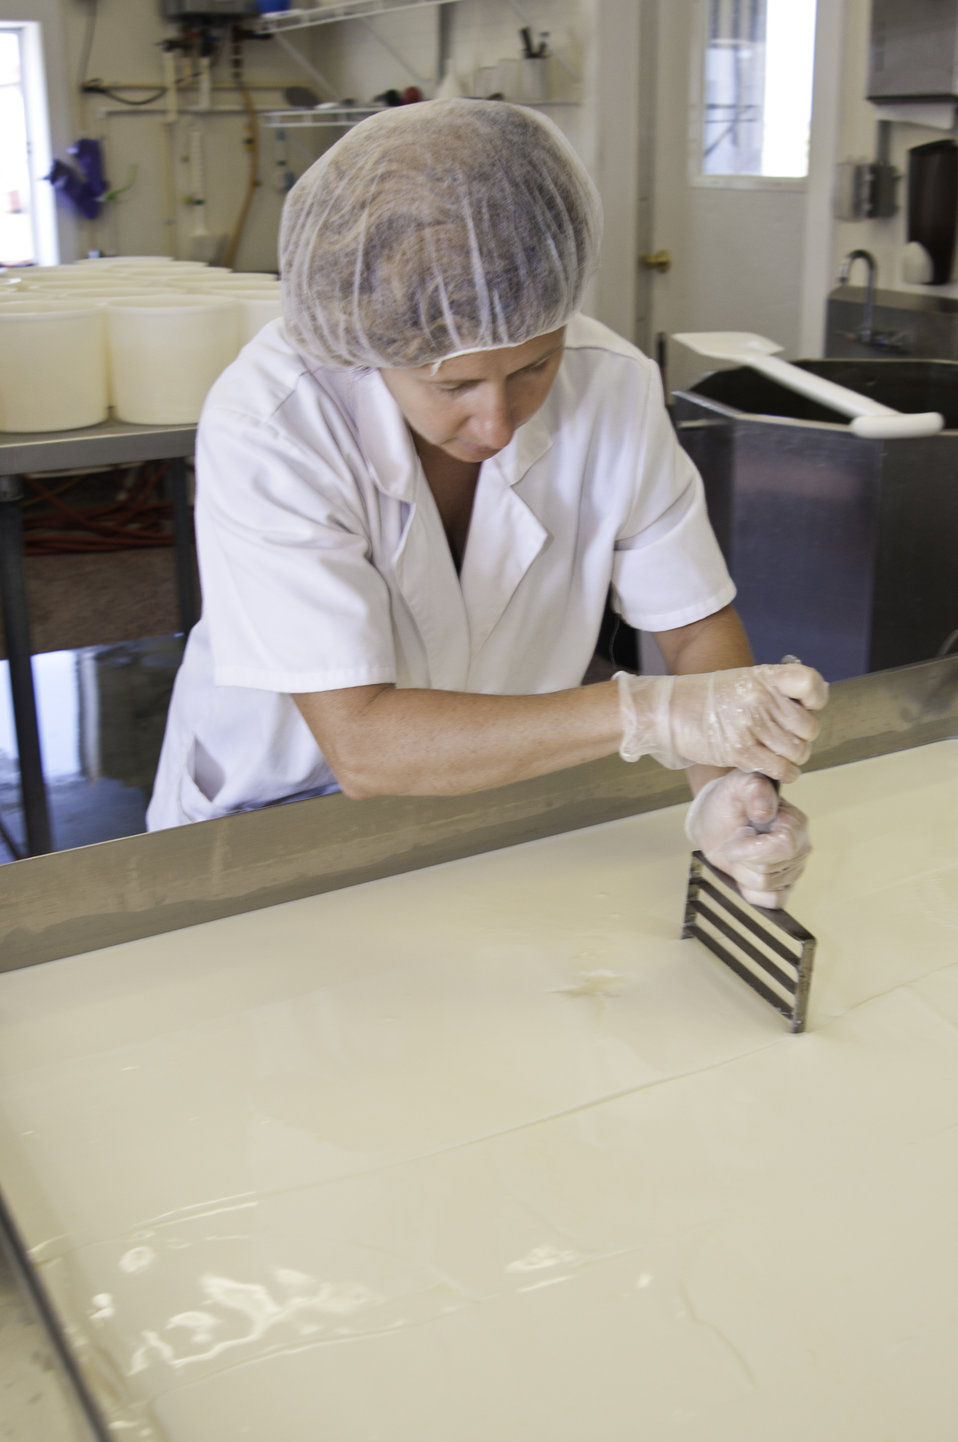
Chapel’s Country Creamery owner Holly Foster in Easton, MD cuts the milk curd with a curd knife in small cubes. Timing is everything in this step. Then the curds are cooked and stirred in the whey that was expelled in the cutting process. The dairy uses fresh raw milk 12-24 hours old. The milk is all-natural and contains no synthetic hormones, antibiotics, or chemical compounds. The 1150 pounds of milk in the vat will be used to make the dairy’s “Bay Blue” Cheese.